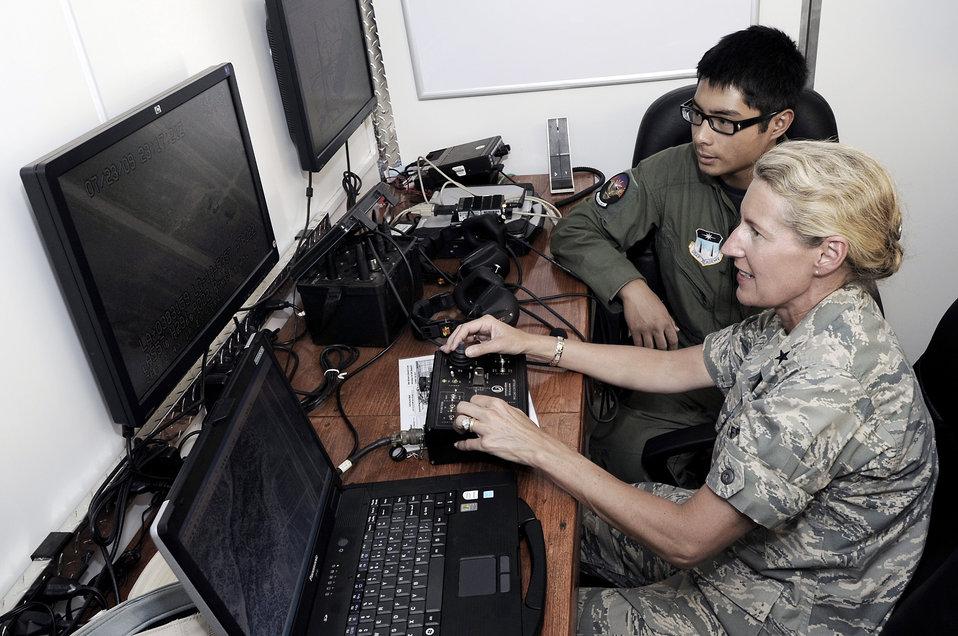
Academy officials add unmanned aircraft system into curriculum

Brig. Gen. Dana H. Born operates a camera on a Viking 300 unmanned aircraft system as Cadet 2nd Class Rupert Domingo watches July 23 at Camp Red Devil at Fort Carson, Colo. Cadet Domingo is assigned to the U.S Air Force Academy's UAS program. General Born is the Academy dean of faculty.